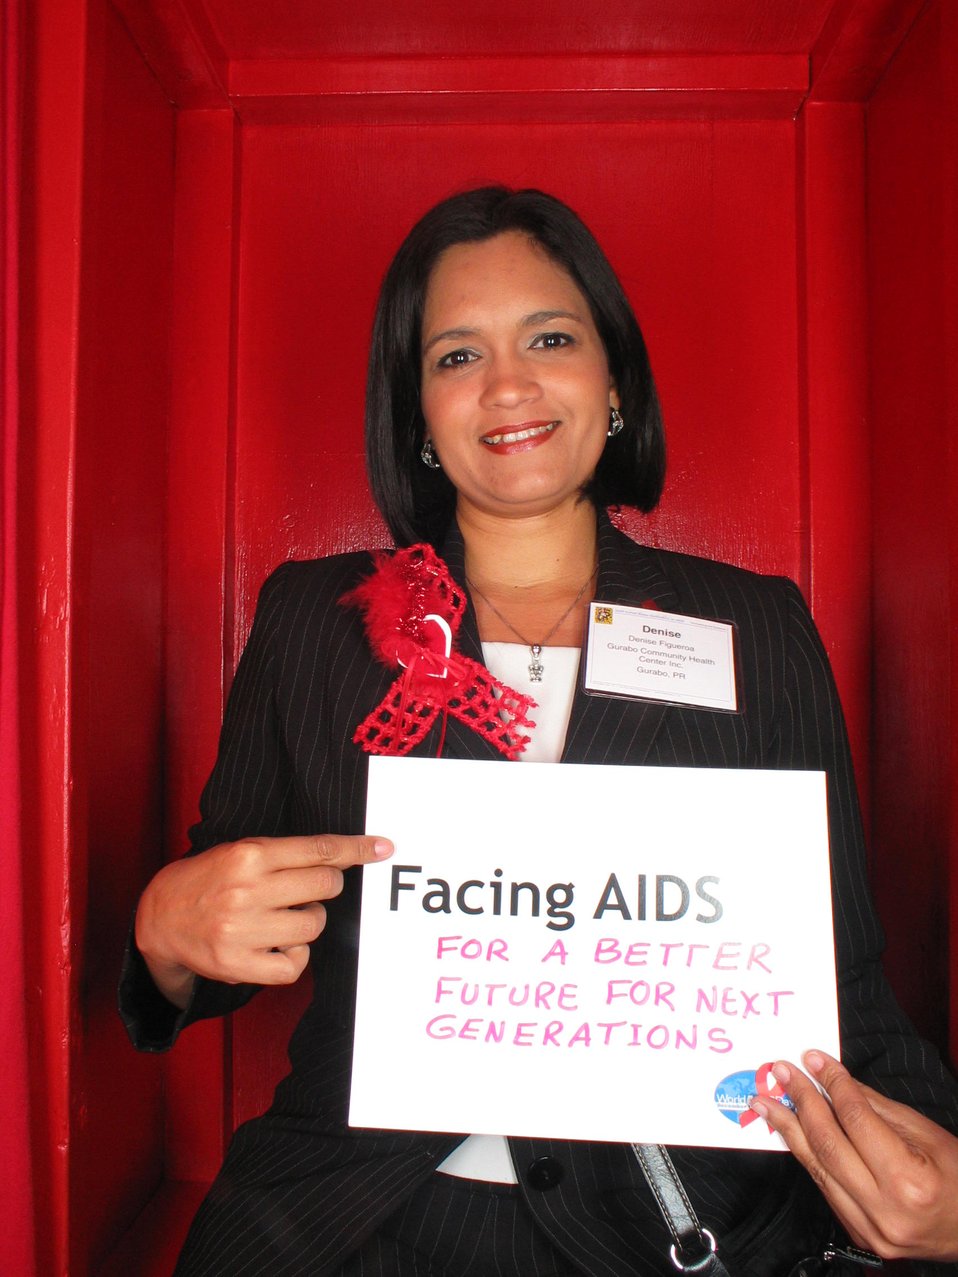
Facing AIDS for a better future for next generations.